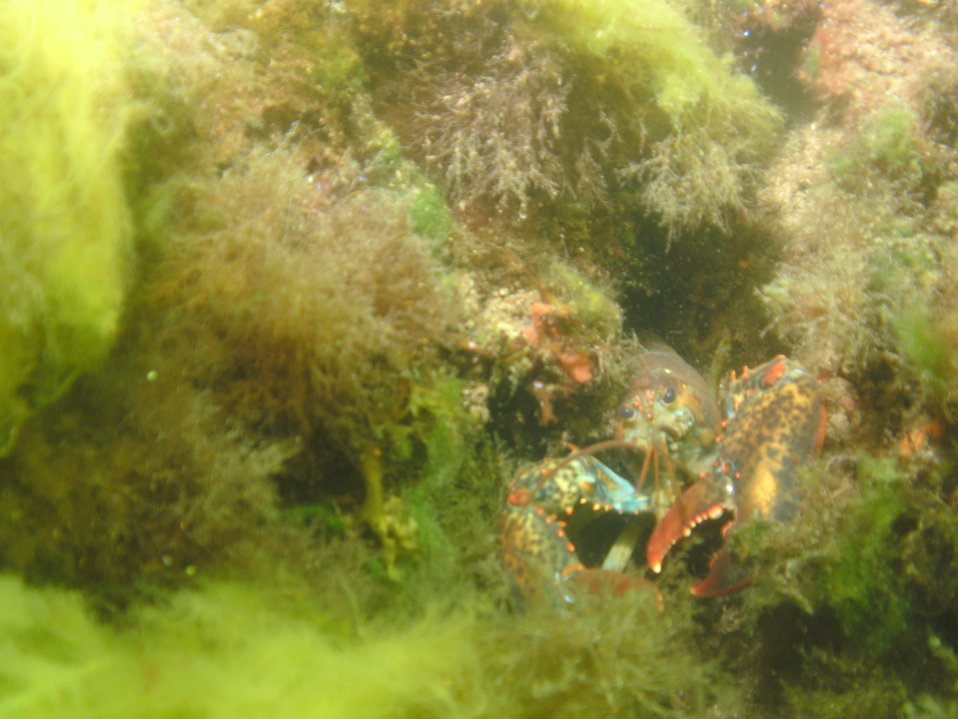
American Lobster, Gloucester, Massachusetts

This American Lobster (homarus americanus) was photographed in 15 feet of water in Plum Cove, Gloucester, Massachusetts during an eelgrass monitoring survey.

Too much nitrogen in our coastal waters is a major environmental challenge that EPA is currently studying. Nitrogen comes from both manmade and natural sources and too much or overenrichment in the marine environment can be harmful for marine life.

New England's dive team does a lot of work with eelgrass (zostera marina), because it is an excellent indicator of water quality. Just like fertilizers that help plants grow on land, nitrogen in the water can cause excessive plant growth, or eutrophication.

Due to its high sensitivity to changes in water clarity and nitrogen concentrations, eelgrass is an excellent indicator of environmental conditions.

By tracking changes in the eelgrass, we gain better knowledge about the needed changes in water quality.

'While out collecting this type of data, we always bring our underwater camera for possible photo opportunities such as this shy lobster.' ~Phil Colarusso, U.S. EPA